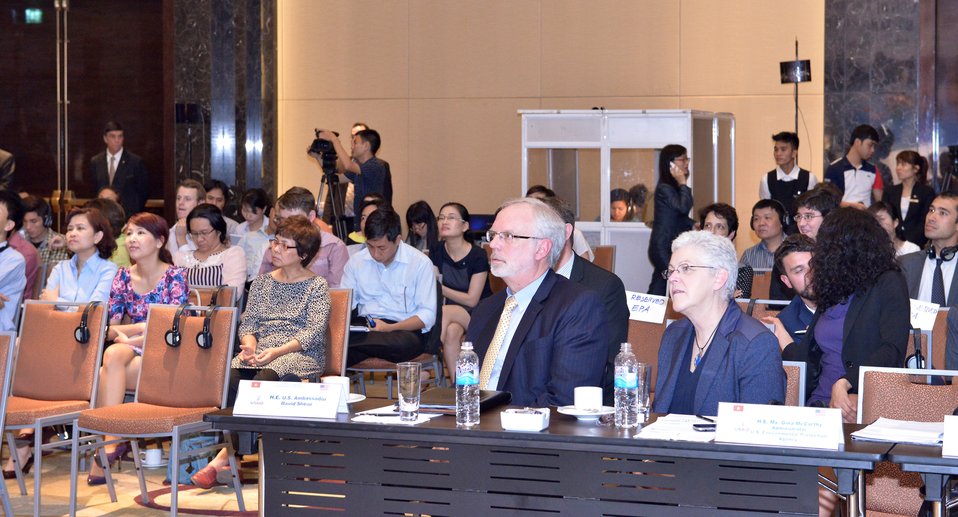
Launching of Ha Long Bay Alliance

Hanoi, April 15, 2014.